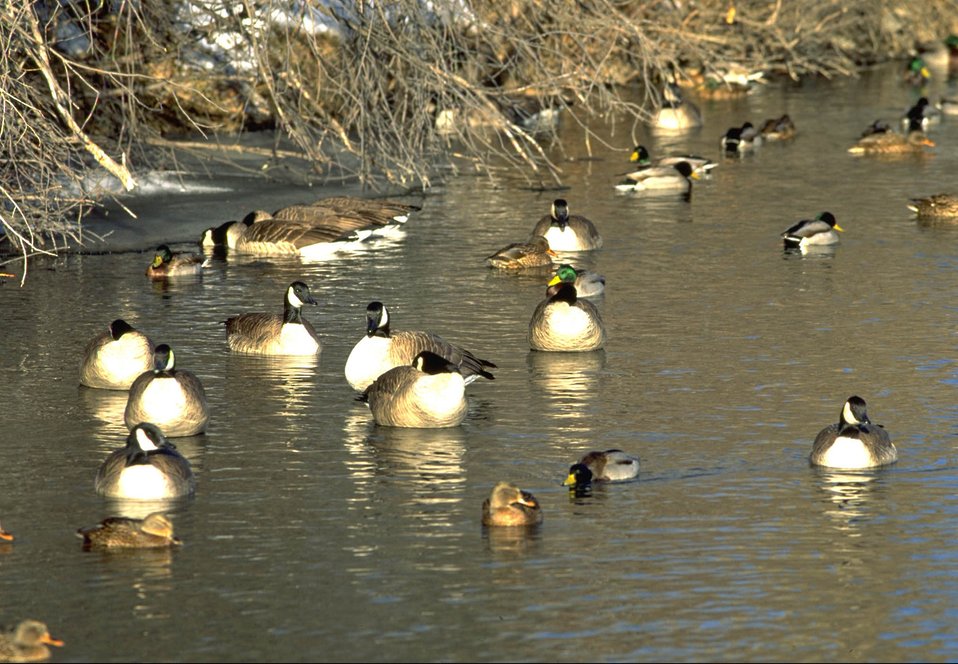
Canada Geese on water